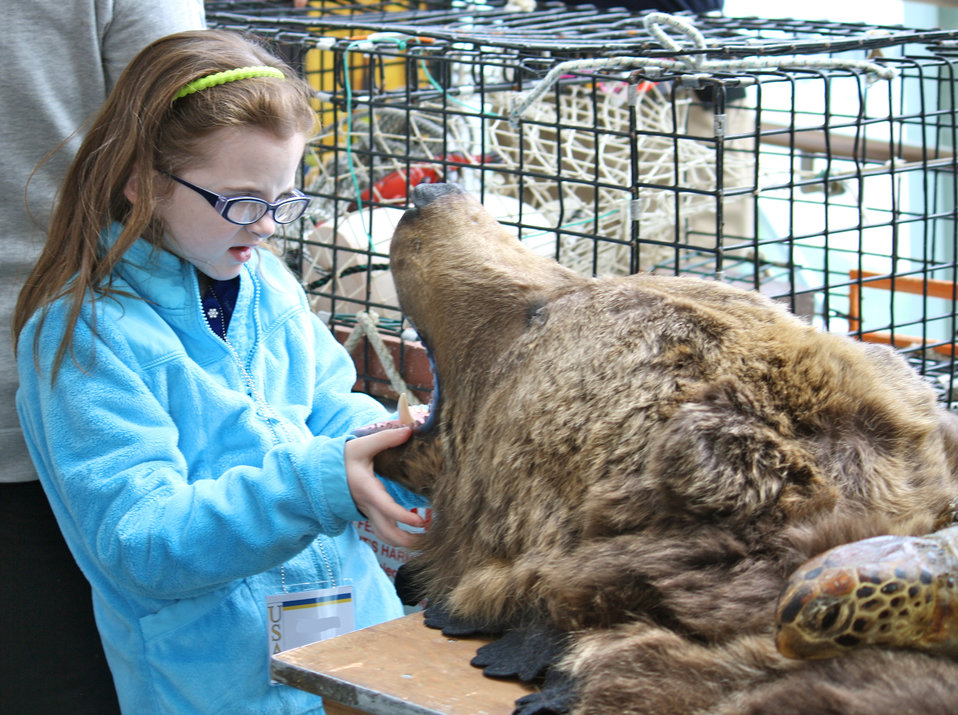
Girl and Bear Skin